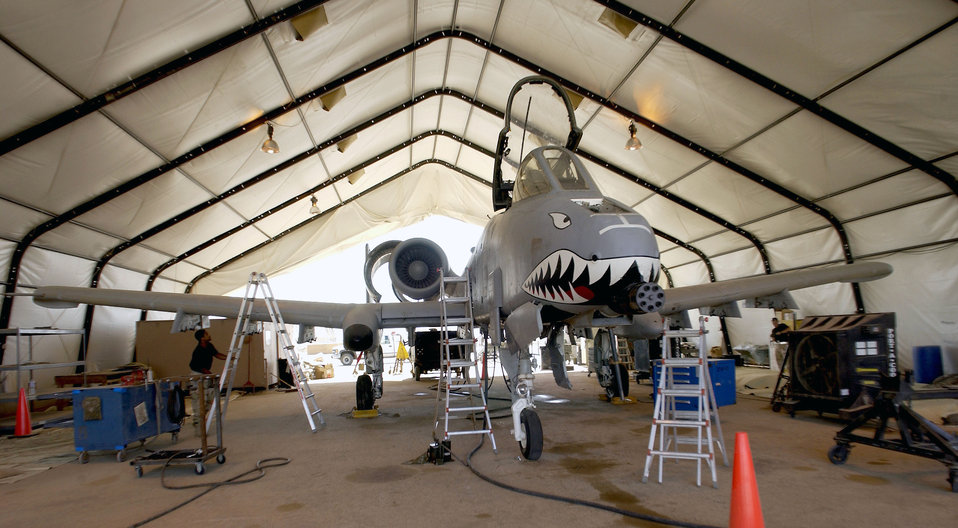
A little shade

TALLIL AIR BASE, Iraq -- Maintainers from the 407th Expeditionary Maintenance Squadron repair an A-10 Thunderbolt II here June 24. The base is where major maintenance is performed on the airframe inside Iraq.